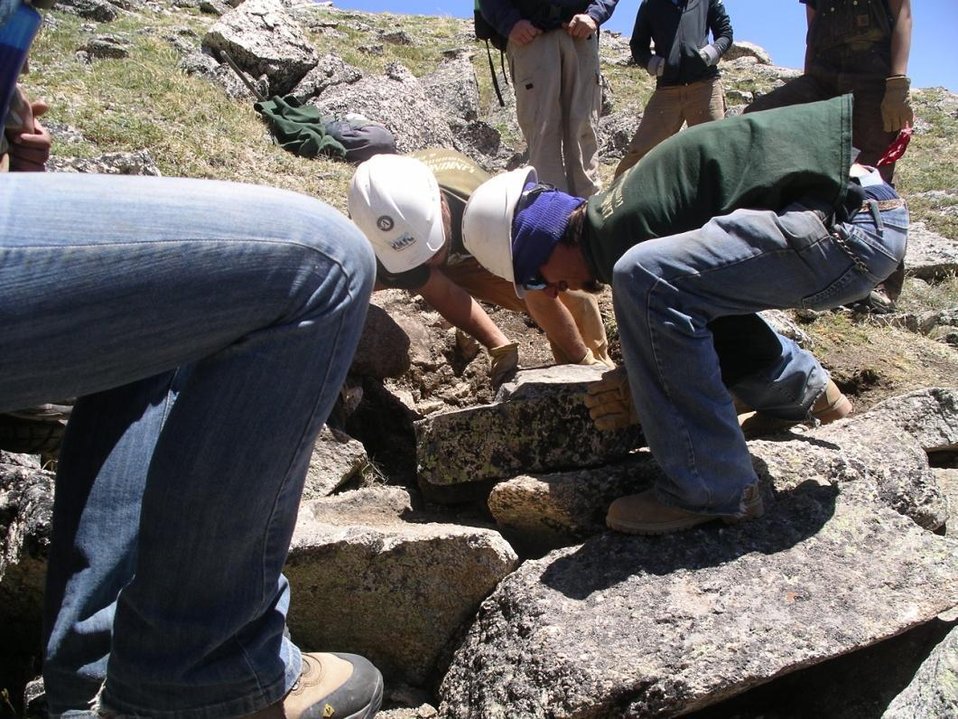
Mount Yale Trail Realignment rocks

Rocky Mountain Youth Corps members in partnership with the U.S. Department of Agriculture’s (USDA) Forest Service (FS) lift heavy boulders as part of a project to turn user-created trails on Mount Yale, CO into properly maintained trails that do not hurt the environment on June 15, 2012. The Youth Corps focused on user-created trails on Mount Yale that followed the mountain’s fall line, leading to severe erosion and significant vegetation loss in a highly sensitive alpine environment. They rerouted 1.4 miles of trail, brought up to standard another 2.56 miles; heavily rebuilt a .29-mile section and stabilized and closed for use another 1.37 miles. They also planted or replanted more than 15,000 vegetative plugs.